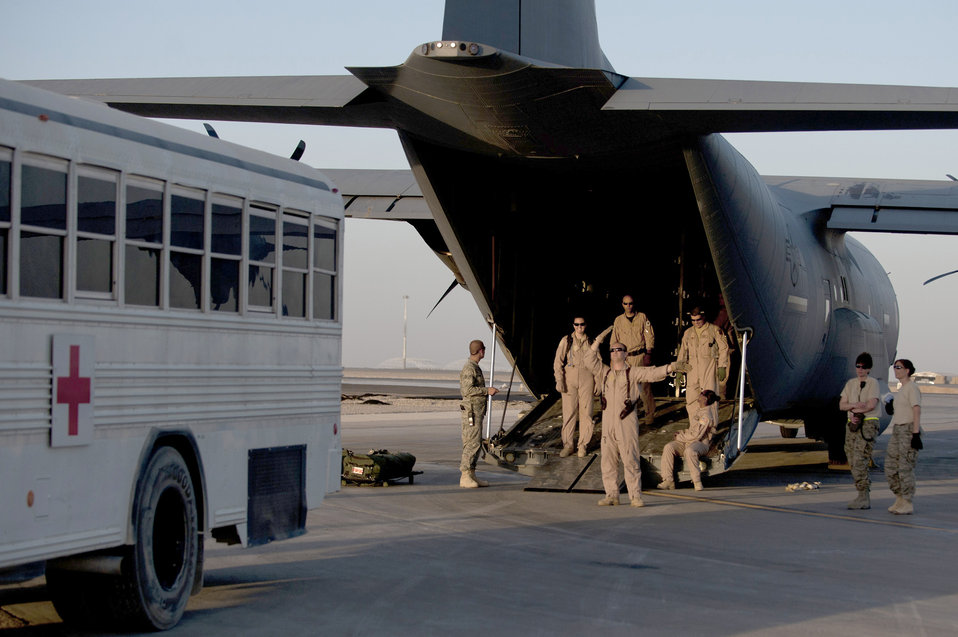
Transporting the wounded

Members of the 451st Expeditionary Aeromedical Evacuation Squadron direct an ambulance bus into place prior to loading injured service members onto a C-130 Hercules May 21, 2011, at Camp Bastion, Afghanistan.